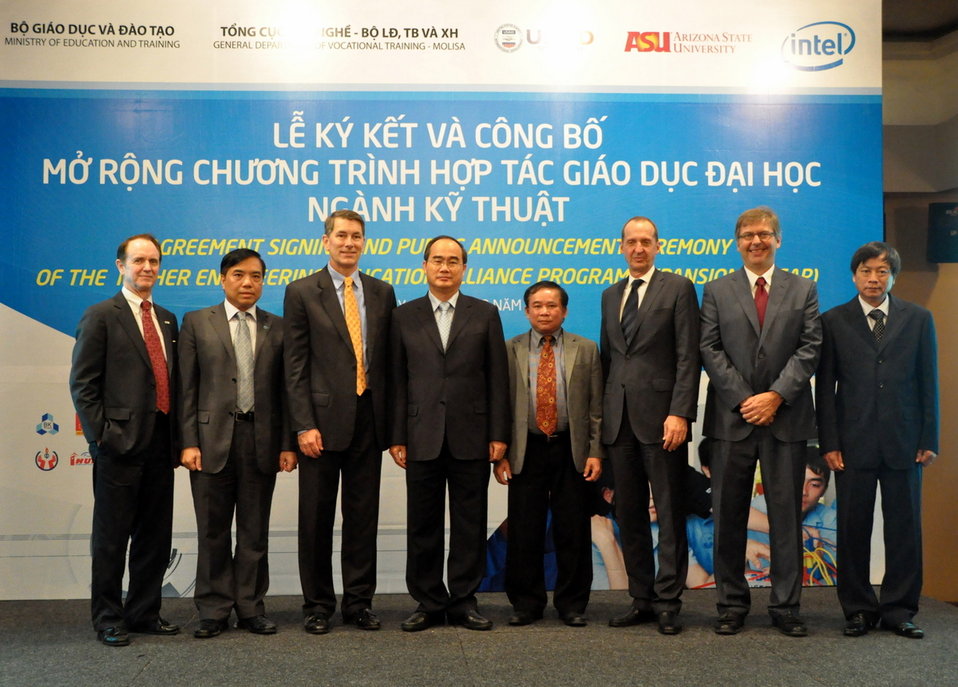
Higher Engineering Education Alliance Program Expansion Launch

Hanoi, August 20, 2012.